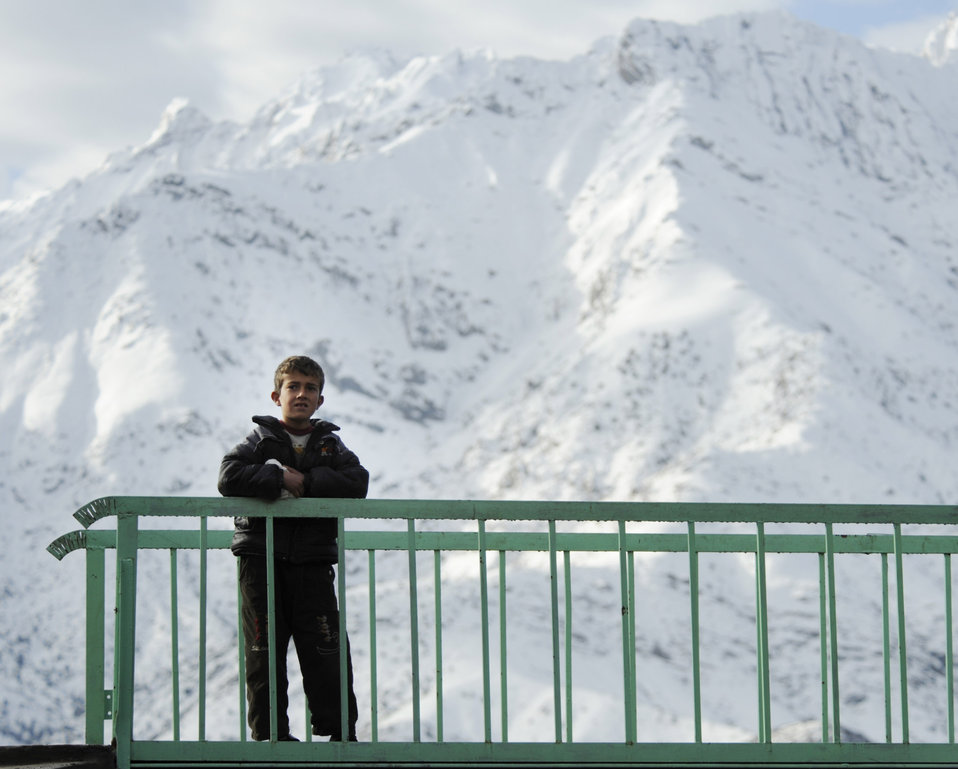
American servicemembers visit Afghan villagers

An Afghan boy watches U.S. military members of Afghanistan's Panjshir Provincial Reconstruction Team as they survey a road in the Panjshir Province March 4.